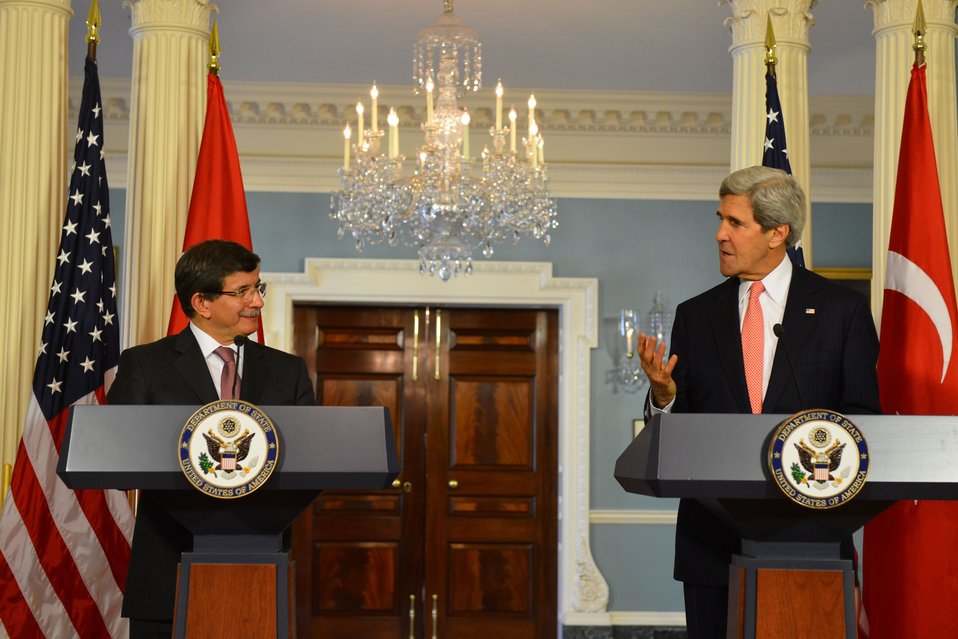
Secretary Kerry and Turkish Foreign Minister Davutoglu Address Reporters

U.S. Secretary of State John Kerry and Turkish Foreign Minister Ahmet Davutoglu address reporters after their bilateral meeting at the U.S. Department of State in Washington, D.C., on November 18, 2013.